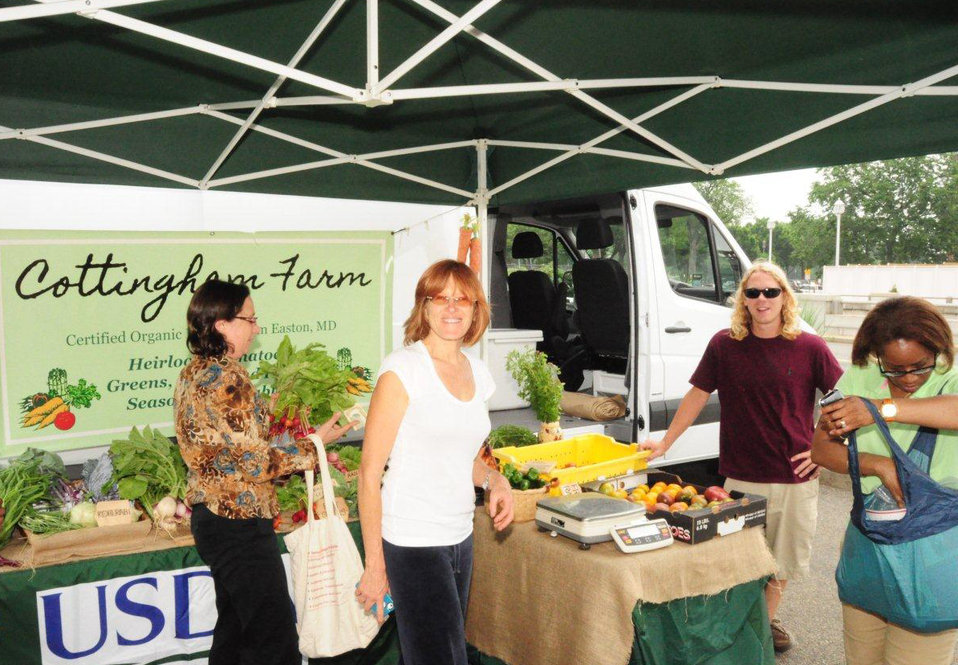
Organic-Vendor---Web

Cottingham Farm owner Cleo Braver is a new vendor at the U.S. Department of Agriculture’s (USDA) Farmer’s market at 12th and Independence Ave. SW, Washington, D.C. on June 8, 2012. Cottingham Farm offers customers certified organic products.